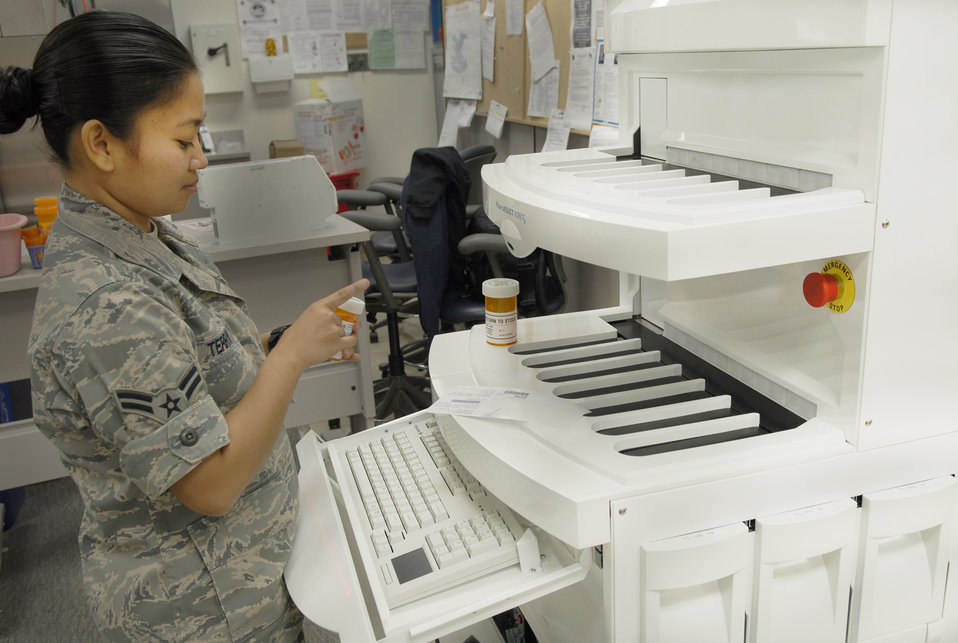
Kadena ROBOTx

Airman 1st Class Roma Terry adds a label to a patient's prescription Dec. 10, 2010, at Kadena Air Base, Japan. The PharmASSIST ROBOTx assures patient safety with bar code scans of all electronically processed prescriptions. Airman Terry is a pharmacy technician with the 18th Medical Support Squadron.